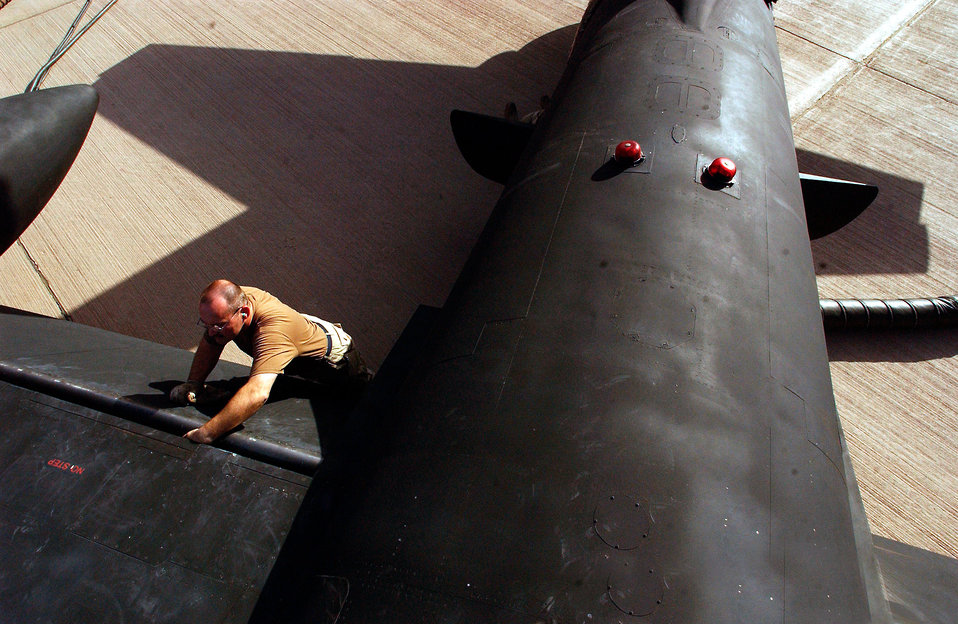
Pre-launch check

OPERATION IRAQI FREEDOM -- Master Sgt. Michael Rac, a production superintendent deployed from 9th Maintenance Squadron, Beale Air Force Base, Calif., to the 363rd Expeditionary Aircraft Maintenance Squadron, walks around a U-2 Dragon Lady to ensure the aircraft is ready for launch on April 11. The U-2 is a high altitude-multi intelligence reconnaissance aircraft. It can fly above 70,000 ft and provides near-real-time imagery and signals intelligence to war fighters and national authorities in supportof Operation Iraqi Freedom at a forward deployed location in Southwest Asia.